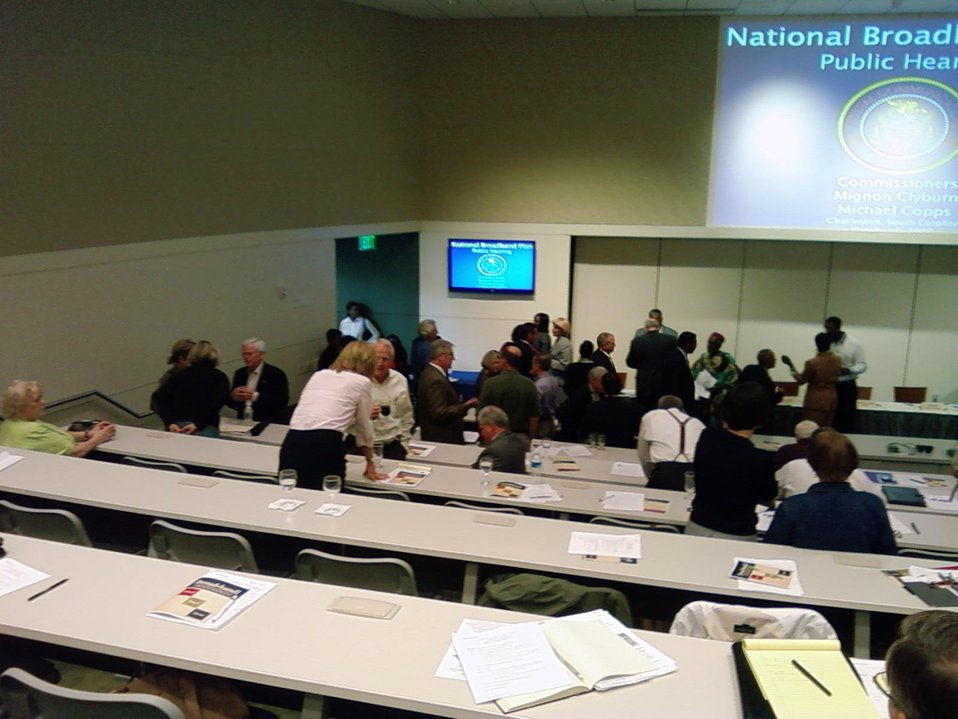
Field Hearing on Broadband Adoption 10-6-09